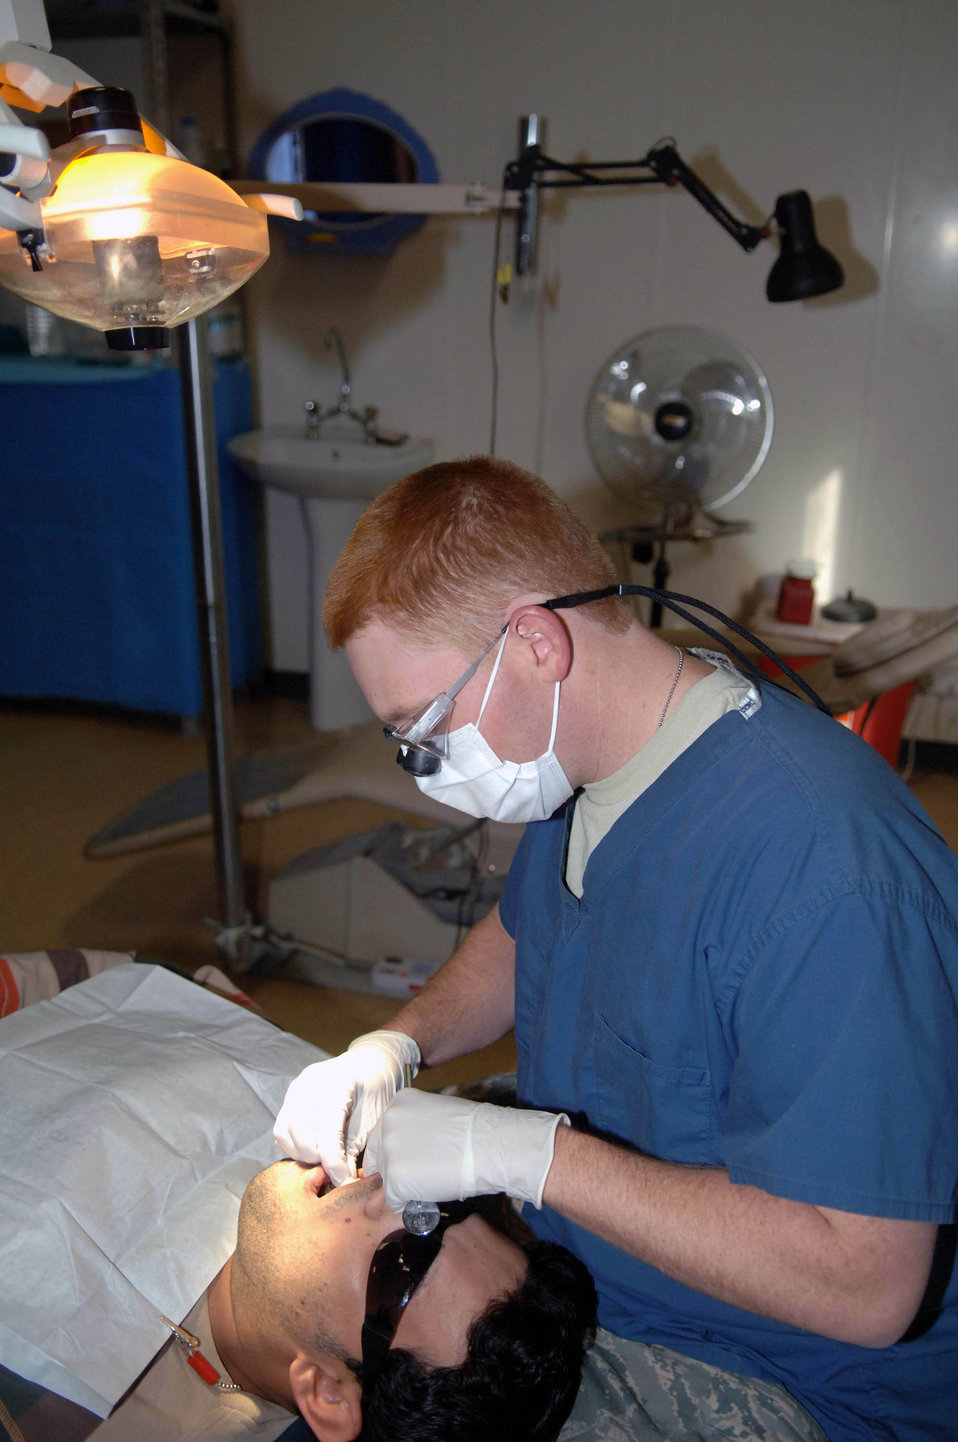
Air Force dental team cares for Iraqi counterparts

Capt. Lanny Giesler packs a patients mouth with gauze after performing a root canal Dec. 5 at Victory Base Complex, Iraq. The clinic sees an average of 12 to 16 patients a day. Captain Giesler, a Special Operations Iraqi Transition Team dental adviser, is deployed from Little Rock Air Force Base, Ark.